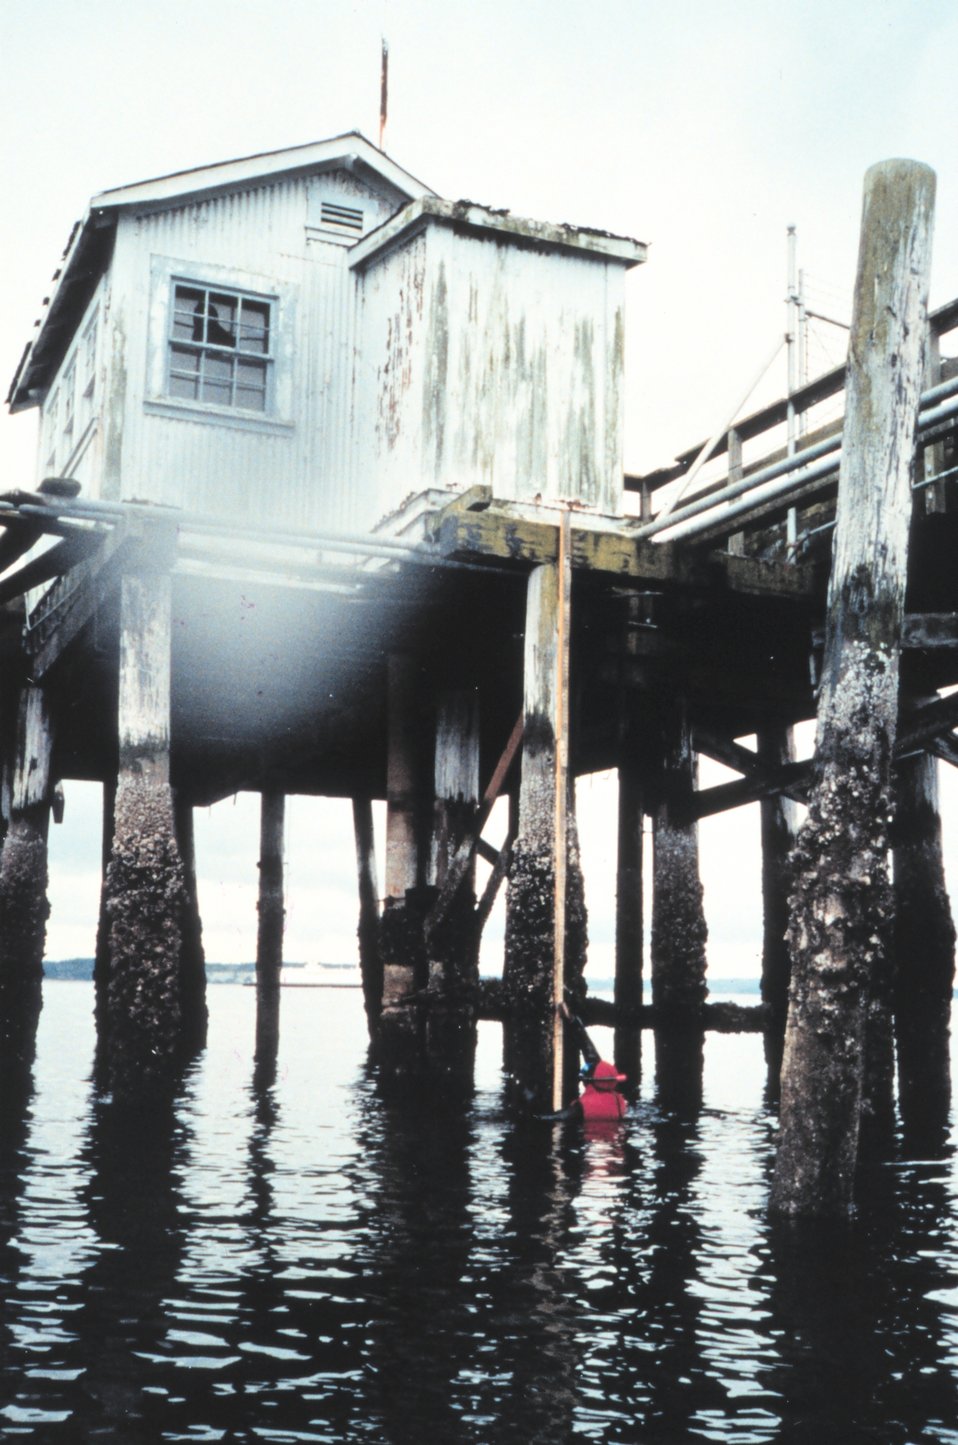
Inspecting the tide staff at Port Townsend.